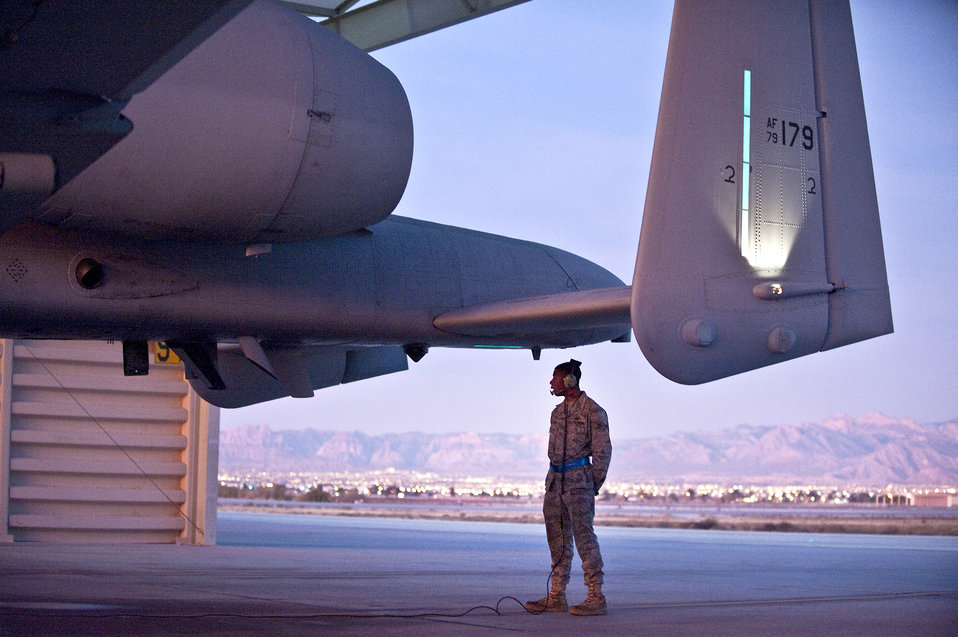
Green Flag West 11-2

Senior Airman Edwin Watkins takes a final look at his A-10 Thunderbolt II before a training mission during the Green Flag West 11-2 exercise Dec. 10, 2010, at Nellis Air Force Base, Nev. Green Flag-West provides a realistic air-land integration training environment for forces preparing to support worldwide combat operations. Airman Watkins is a crew chief with the 23rd Aircraft Maintenance Squadron at Moody AFB, Ga.